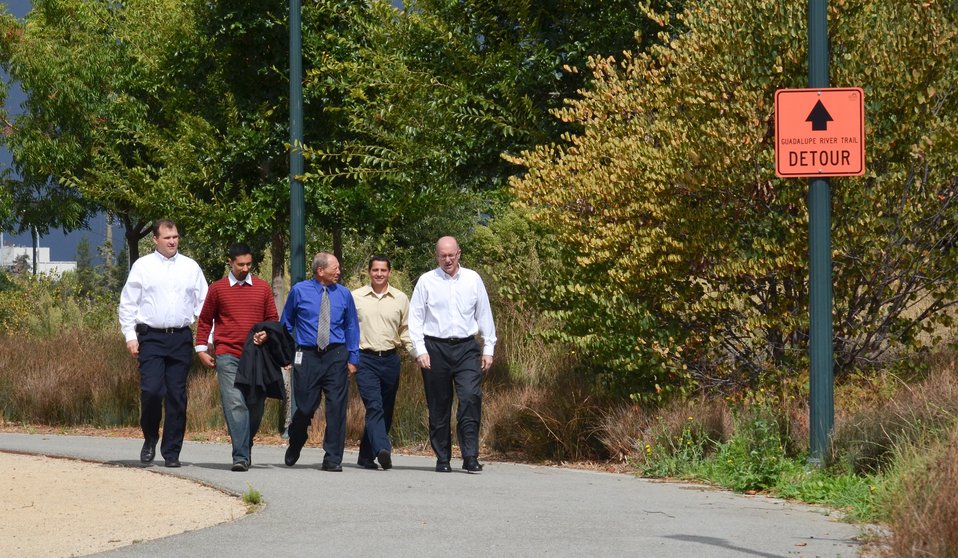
Along the Guadalupe River in San Jose, Calif.

U.S. Army Corps of Engineers Sacramento District project manager Cameron Sessions (far left), civil works branch chief Brandon Muncy (far right), section chief David van Rijn (second from right) and Santa Clara Valley Water District officials tour a new railroad bridge along the Guadalupe River in San Jose, Calif., Oct. 5, 2011. “The new railroad bridge is designed to allow typically debris-laden water to pass through that stretch of the river without pouring into the nearby houses and businesses,” said Sessions. The new bridge is the last piece of a decades-long Corps project to reduce flood risk for the city.